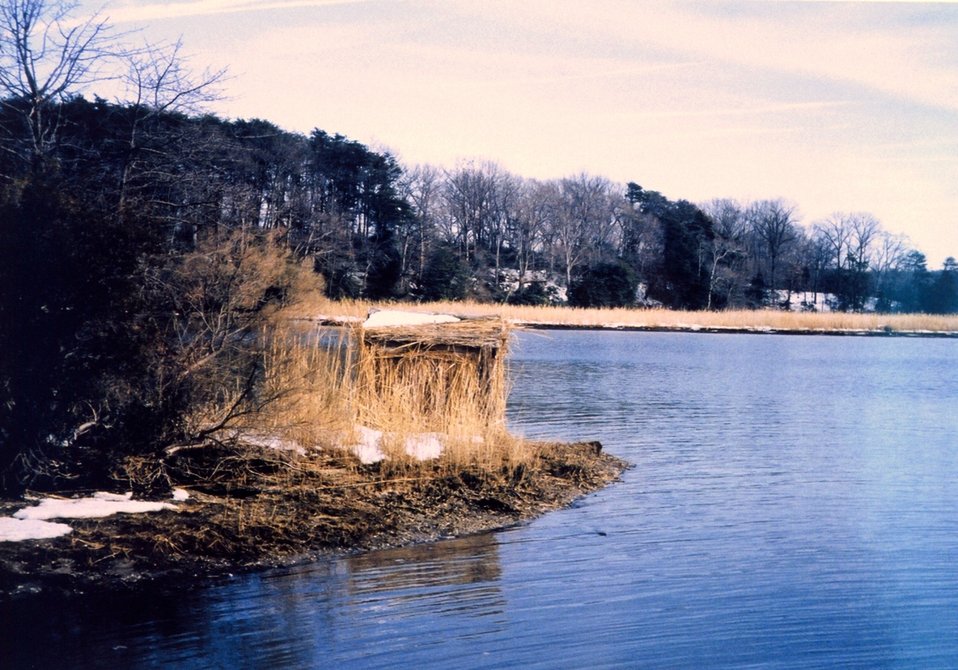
Patuxent River duck blind.